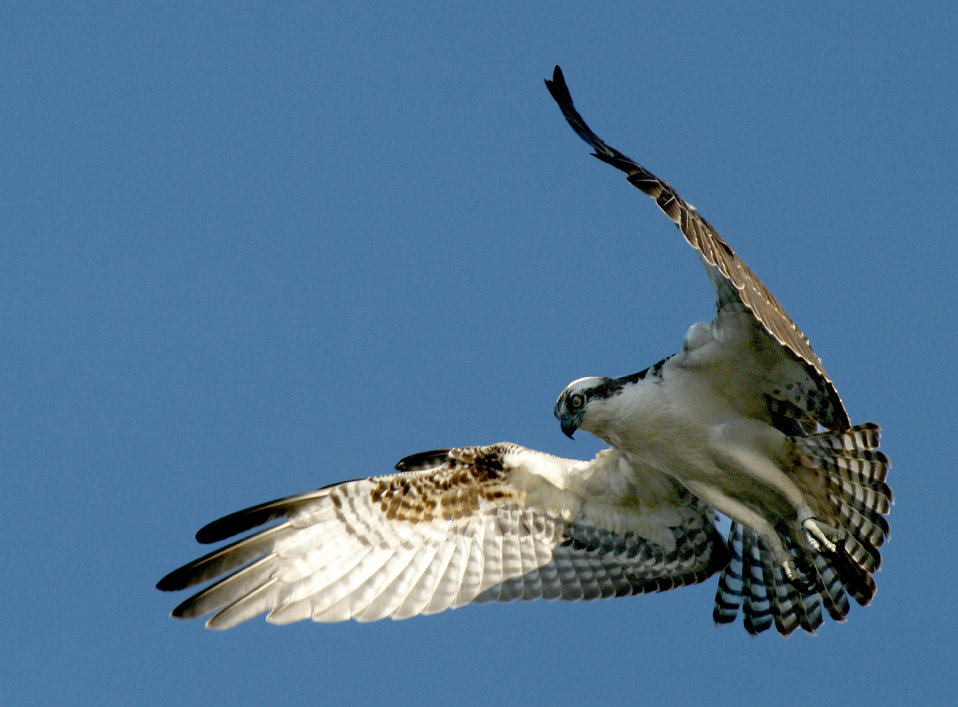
osprey

John Heinz National Wildlife Refuge, PA Photo: Ron Holmes, USFWS